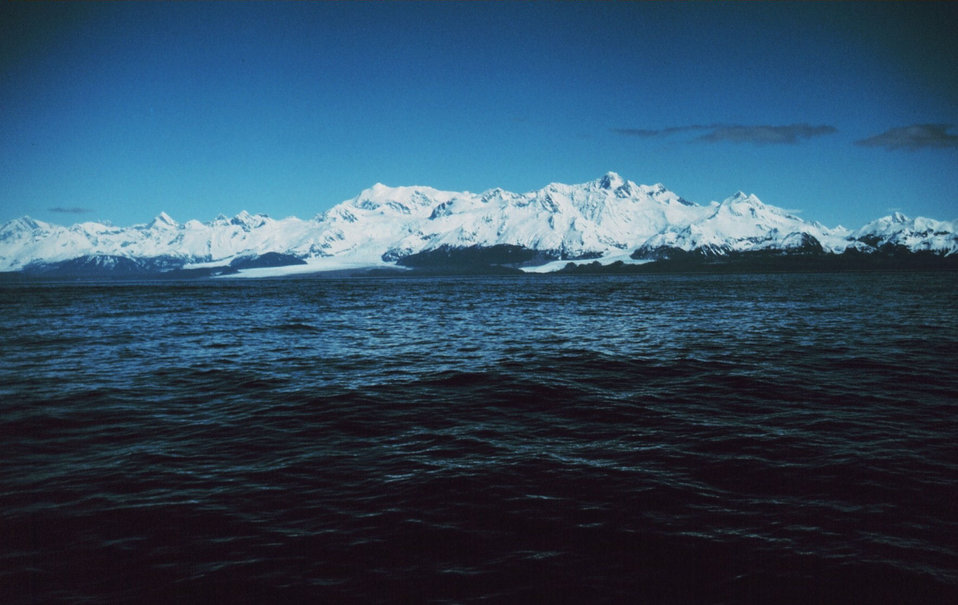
Enroute to Prince William Sound shortly after rounding Cape Spencer